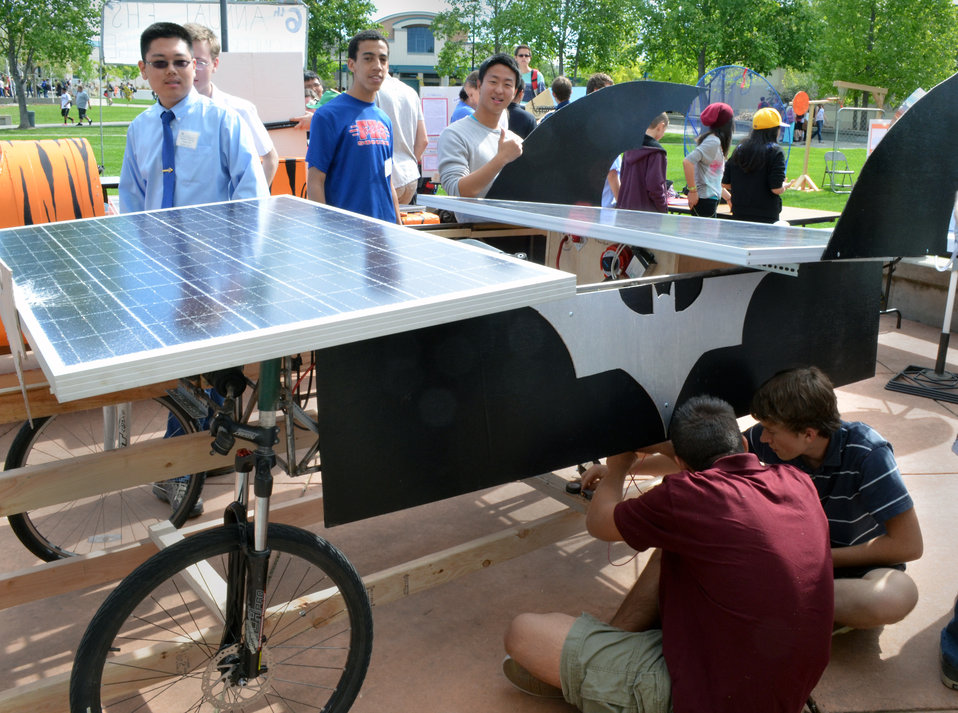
Solar super heroes

Students tweak their solar-powered Batmobile during the sixth annual Folsom High School Engineering Challenge in Folsom, Calif. April 19, 2013. A half dozen personnel from the U.S. Army Corps of Engineers Sacramento District took part as judges for the event that promotes careers in science, technology, engineering and math. Photo cropped for emphasis.